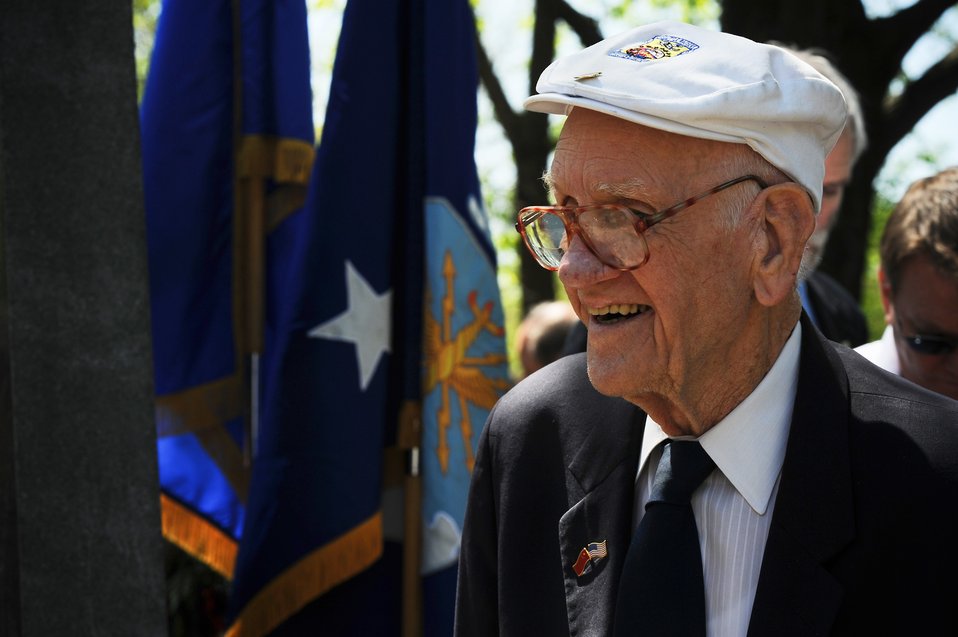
Doolittle Raiders Memorial Service

Maj. Thomas C.Griffin, a Doolittle Raider attends the memorial service honoring all the Doolittle Raiders. the event was held at the National Museum of the U.S. Air Force on April 18, 2010, Wright-Patterson Air Force Base, Dayton, Ohio.